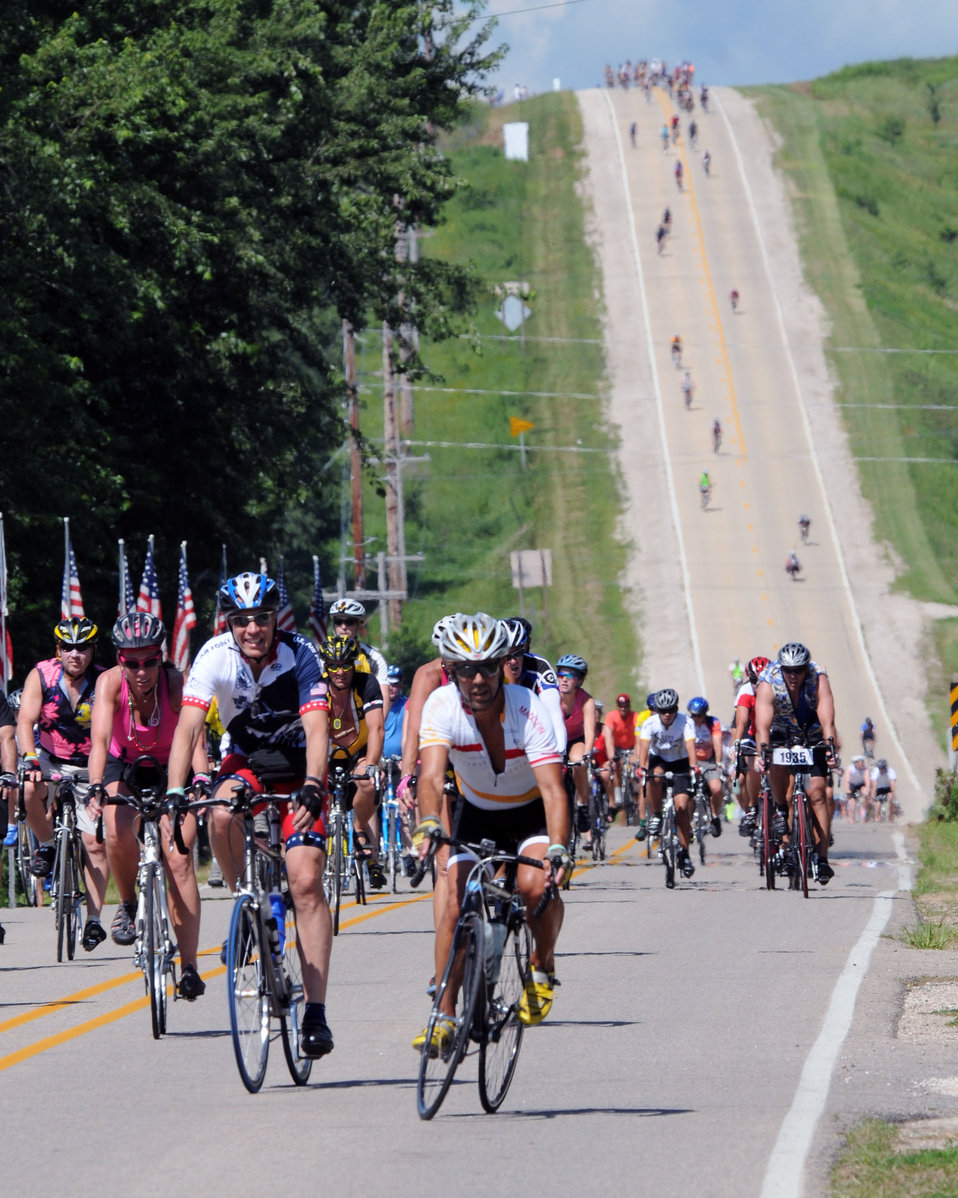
The Register's Annual Great Bicycle Ride Across Iowa

Members of the Air Force Cycling Team roll into Washta, Iowa, July 25, 2010 during the Register's Annual Great Bicycle Ride Across Iowa, also known as RAGBRAI. More than 160 Airmen came to join 10,000 other riders from around the country in the 38th annual bicycle trip across the state of Iowa from the Missouri River in the west, to the Mississippi River in the east.